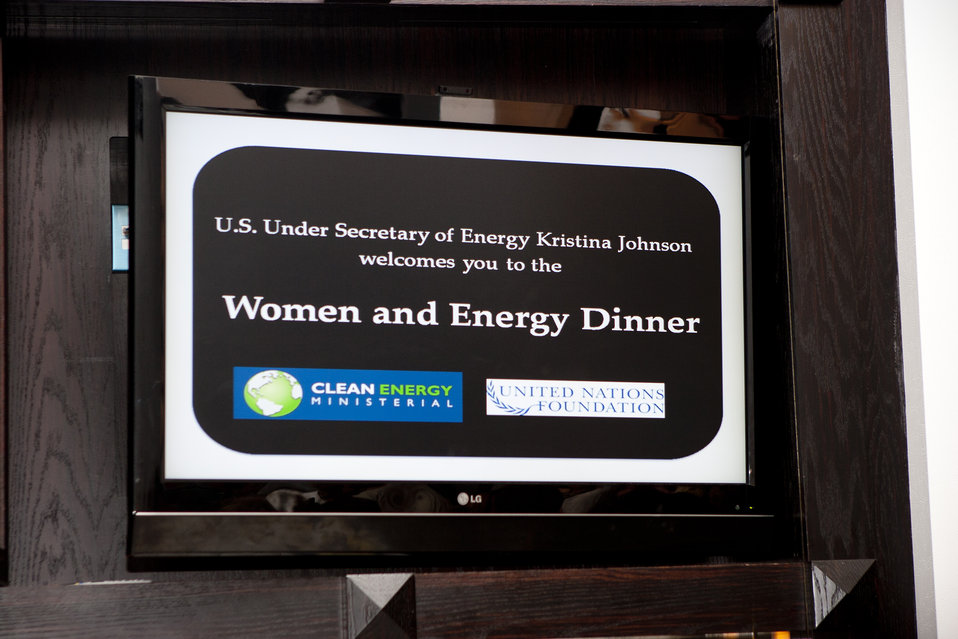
WomenandEnergy 39